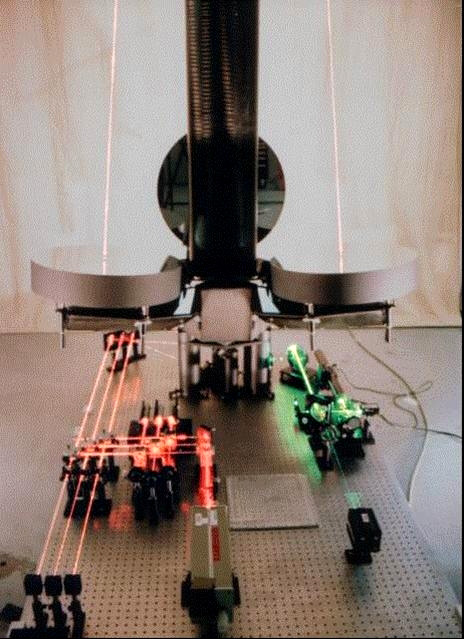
Laser optics check

KIRTLAND AIR FORCE BASE, N.M. (AFPN) -- A laser-based sensing system measures mirror position to ensure the deployable optical telescope's proper functioning in space. It took scientists years to develop this system. The telescope can be launched on an existing unmanned launch vehicle.